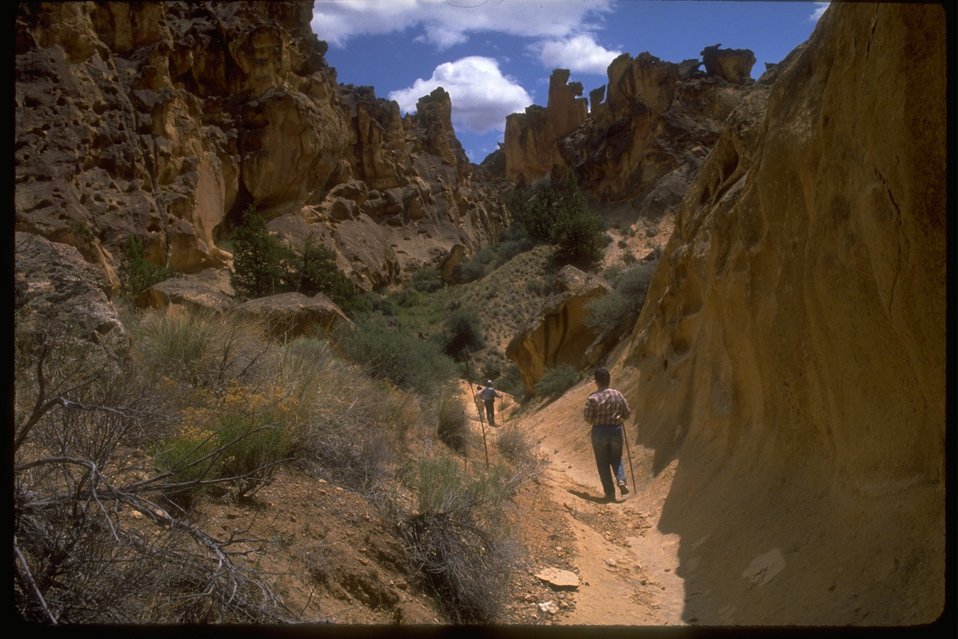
Leslie Gulch Series: visitors walking down small trail.